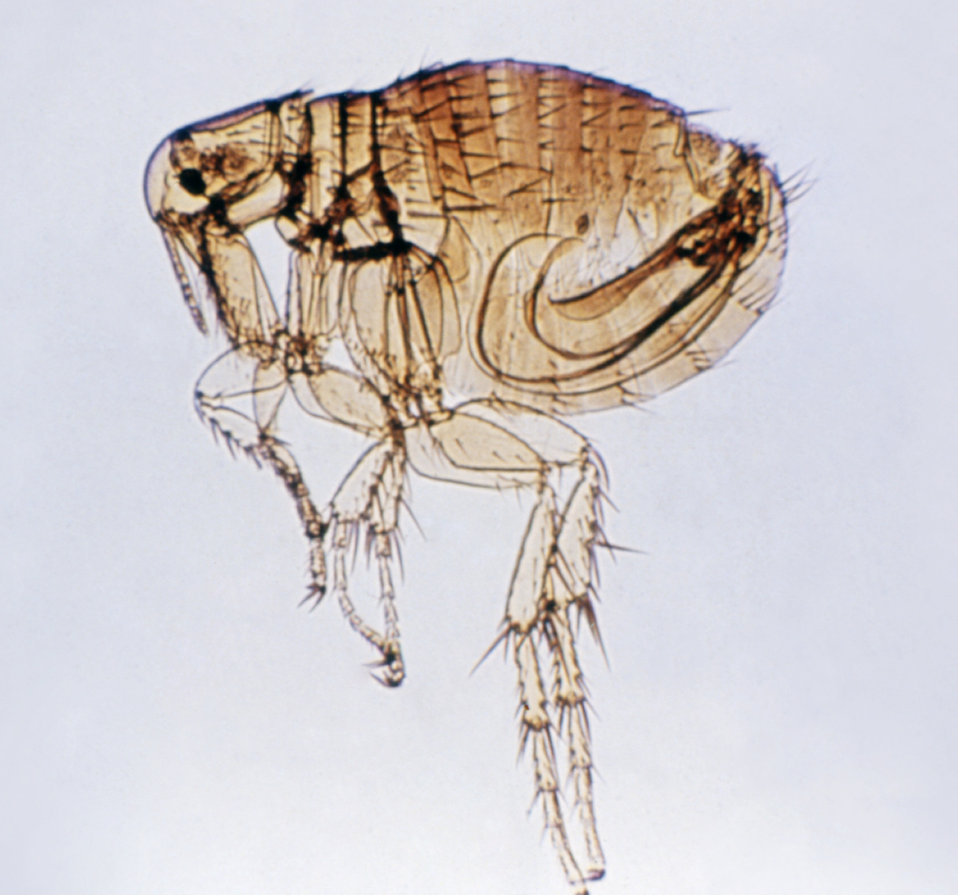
This photograph of a flea was taken during a 1972 study of disease carriers, and pests of migrant labor camps.